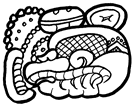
Lietuvių: Majų glifas, simbolizuojantis miestą Calacmul. Padarytas naudojant freeware Maya font.